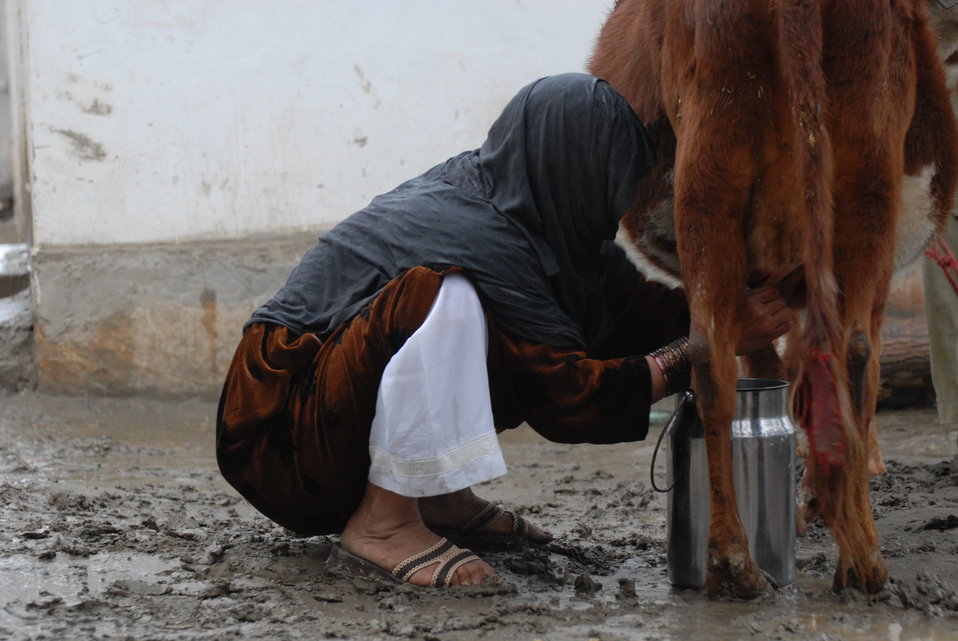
'On the Road' in Nangarhar Province